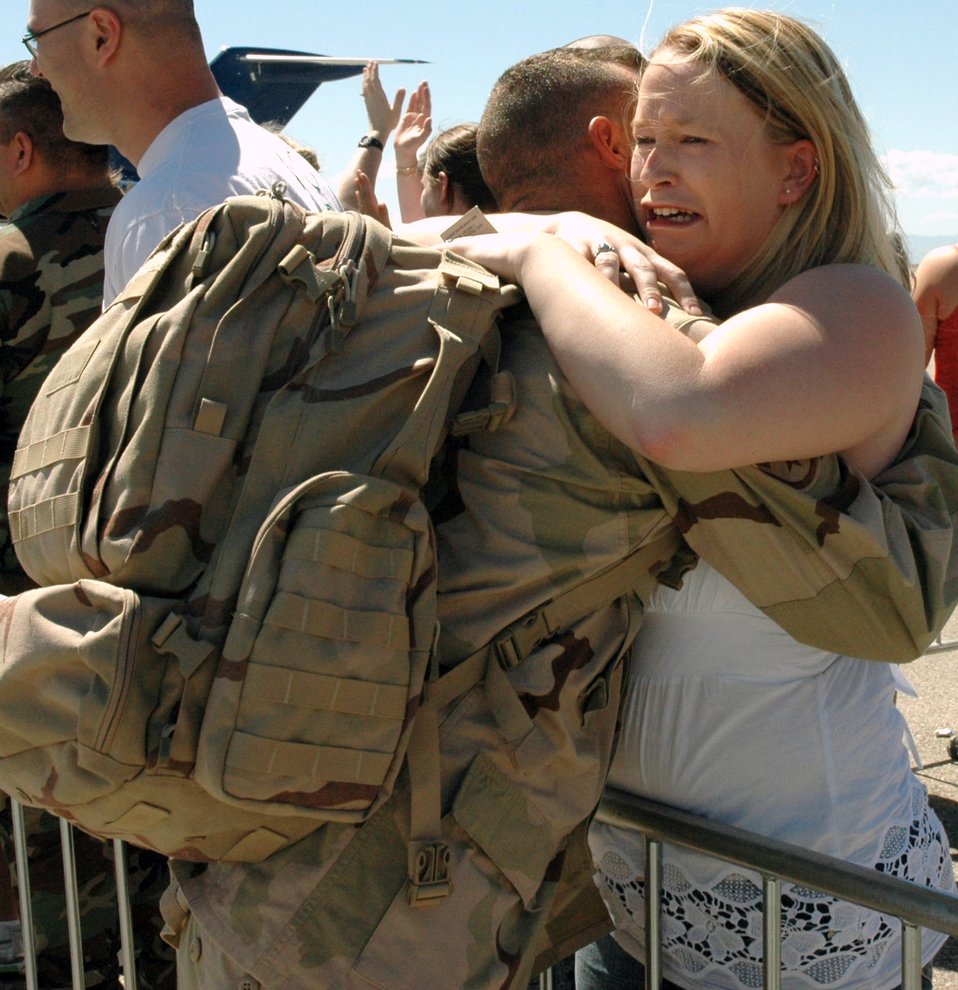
Airmen welcomed home at Mountain Home

Amy Barber welcomes home returning deployed member Staff Sgt. Stan Fossette May 8 at Mountain Home Air Force Base, Idaho. The base greeted 35 members from the 366th Civil Engineer Squadron who helped to build new work centers and living quarters to accommodate additional forces serving at forward operating locations in Iraq and Afghanistan.